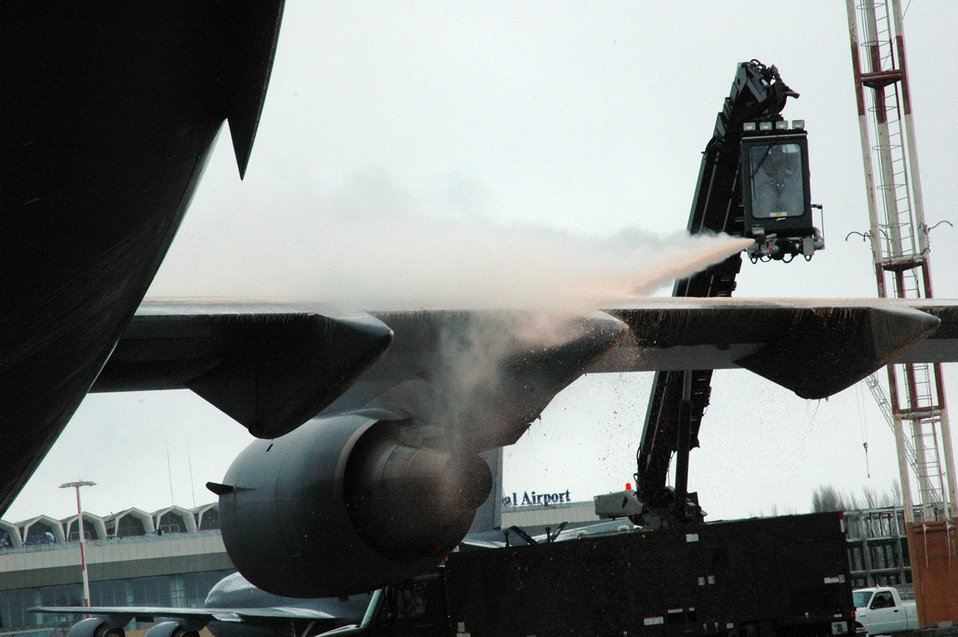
Ice is not nice

Airman 1st Class David Rosas de-ices a C-17 Globemaster III Feb. 20 prior to an airlift mission. Airman Rosas' de-icing cabin is suspended from the end of a 80-foot lift truck. He is with the 817th Expeditionary Airlift Squadron and is deployed from the 62nd Aircraft Maintenance Squadron at McChord Air Force Base, Wash.